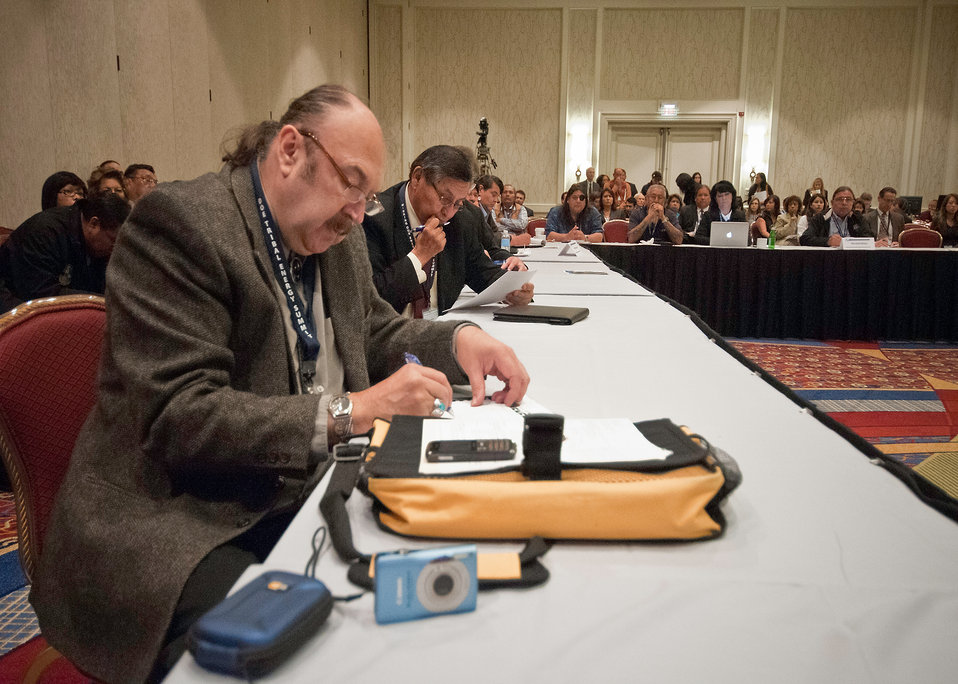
Commissioner Natural Resources Treaty Rights Office Tulalip Tribes, from Tulalip, WA, Terry Williams, and President of The Navajo Nation Ben Shelly take notes during Agriculture Secretary Tom Vilsack’s remarks at the United States Department of Energy (DOE) Tribal Summit with American Indian and Alaska Native Leaders in Washington, DC, on Wednesday, May 4, 2011. Secretary Vilsack discussed alternative energy, economic development and conservation programs available through the Department of Agriculture.